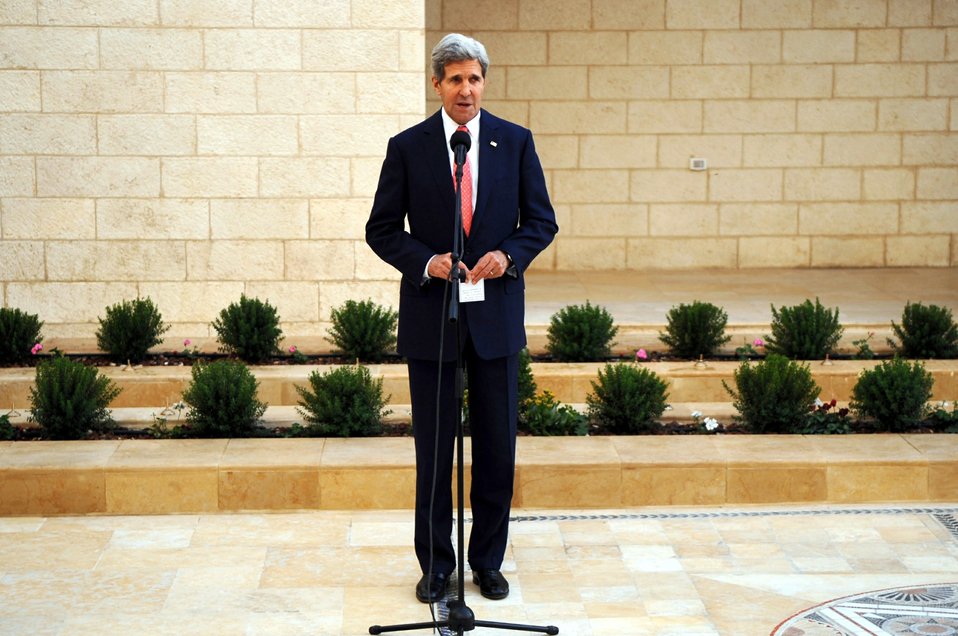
Secretary Kerry Addresses Reporters After Meeting With Palestinian President Abbas

U.S. Secretary of State John Kerry addresses reporters after meeting with Palestinian Authority President Mahmoud Abbas at the Authority's office in Bethlehem, West Bank, on November 6, 2013.